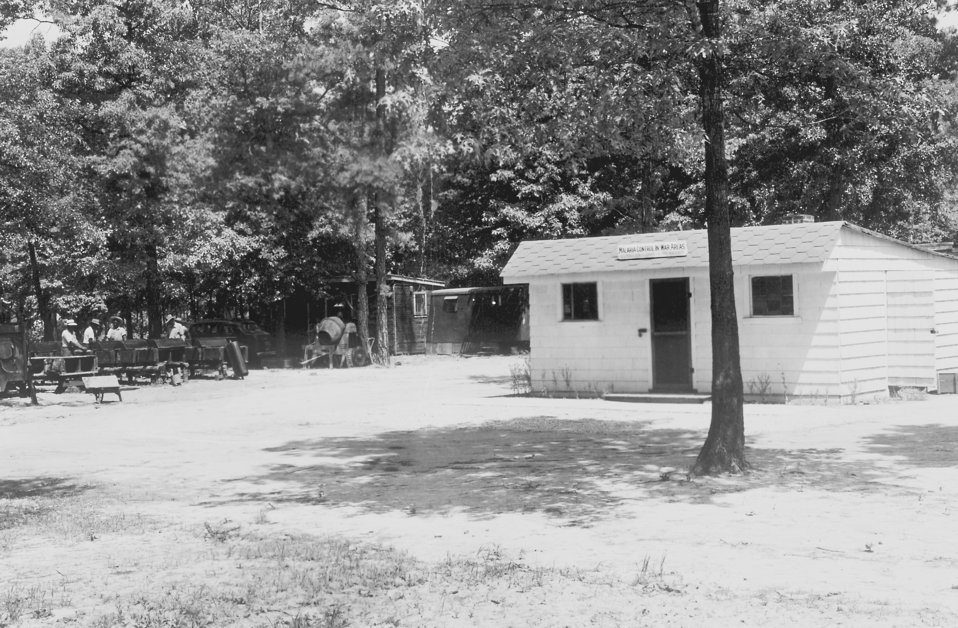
Malaria Control in War Areas, MCWA, Building in Virginia.